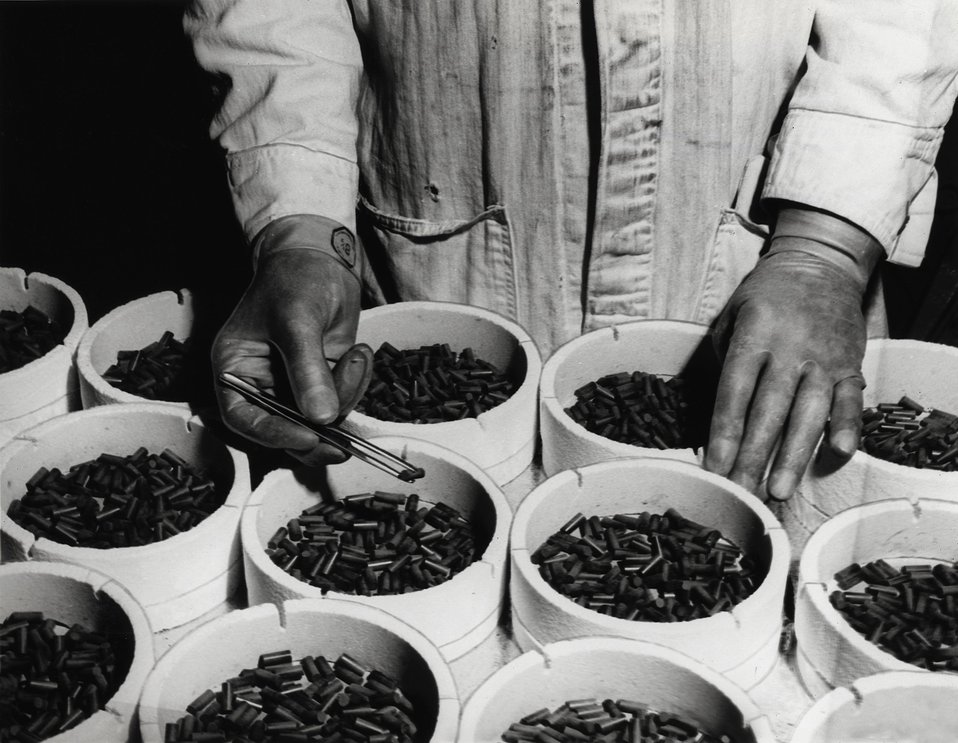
The pellets here are Norton Company's fuel elements made for Argonne. c.1958